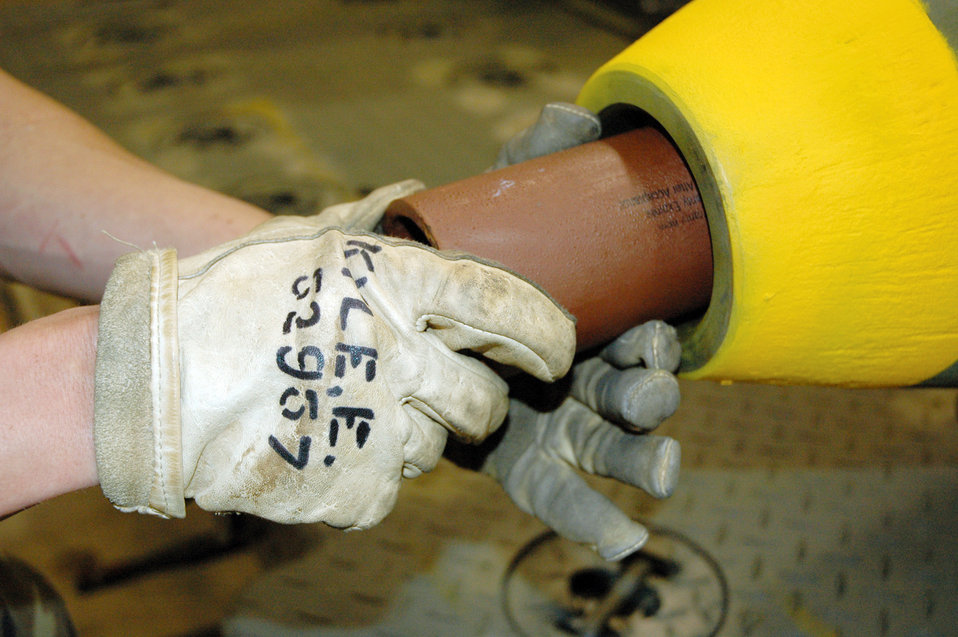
Bomber support

BARKSDALE AIR FORCE BASE, La. -- Airman Eric Kyle inserts a nose support cup into the front of a MK-84 bomb body. The cup supports the nose of the weapon so it does not collapse upon impact. This allows the bomb to better penetrate a target. The Airman is with the 2nd Munitions Squadron here.